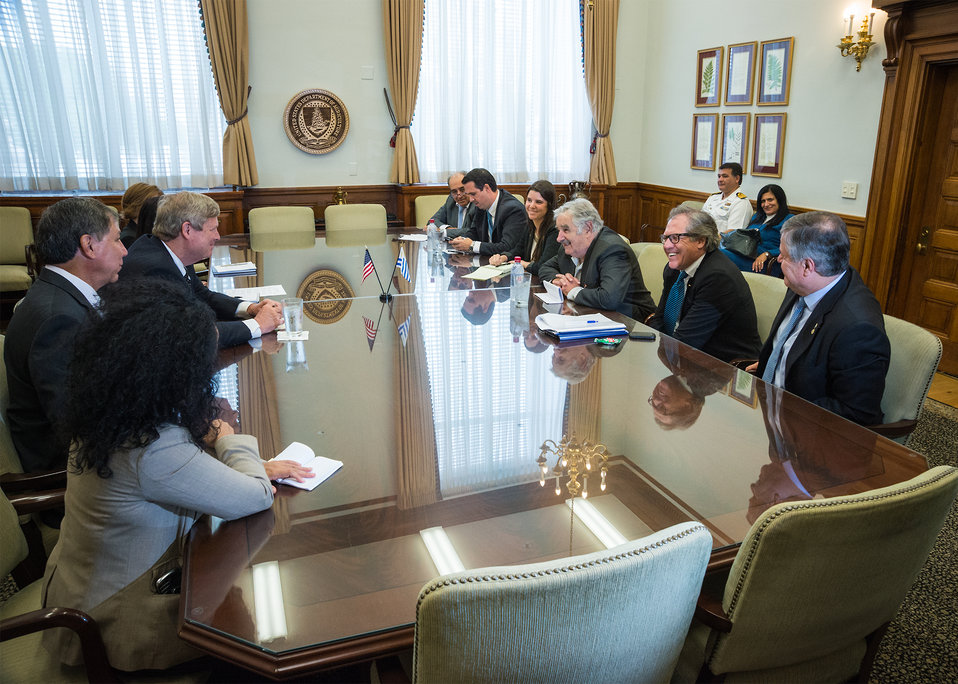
Agriculture Secretary Tom Vilsack and President Jose Mujica of Uruguay discuss cooperation in agricultural research, production and climate changes on agriculture at the U.S. Department of Agriculture (USDA) in Washington, D.C. on Wednesday, May 14, 2014. USDA Marketing and Regulatory Programs (MRP) Under Secretary Ed Avalos and USDA Farm and Foreign Agricultural Services (FFAS) Deputy Under Secretary Darci Vetter participated in the discussion.